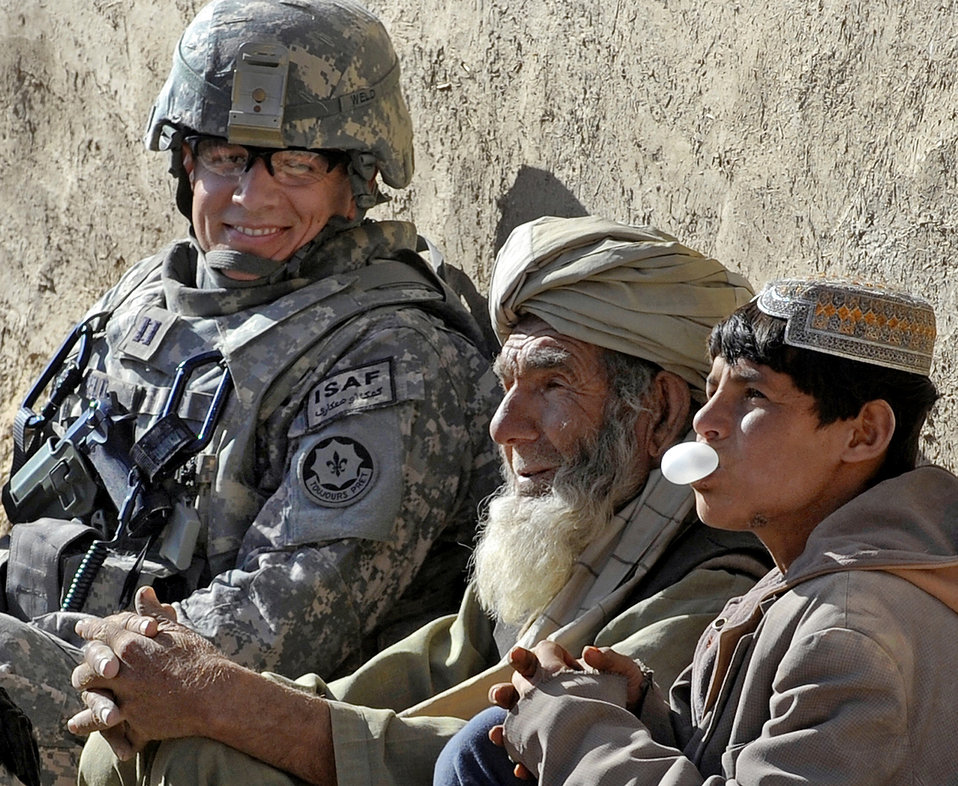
Pop the question

Capt. Ryan Weld talks with villagers during a wroowali, or brotherhood, mission to Bakorzai village, Afghanistan, Dec. 22, 2010. Captain Weld, an intelligence officer, is assigned to Provincial Reconstruction Team Zabul.